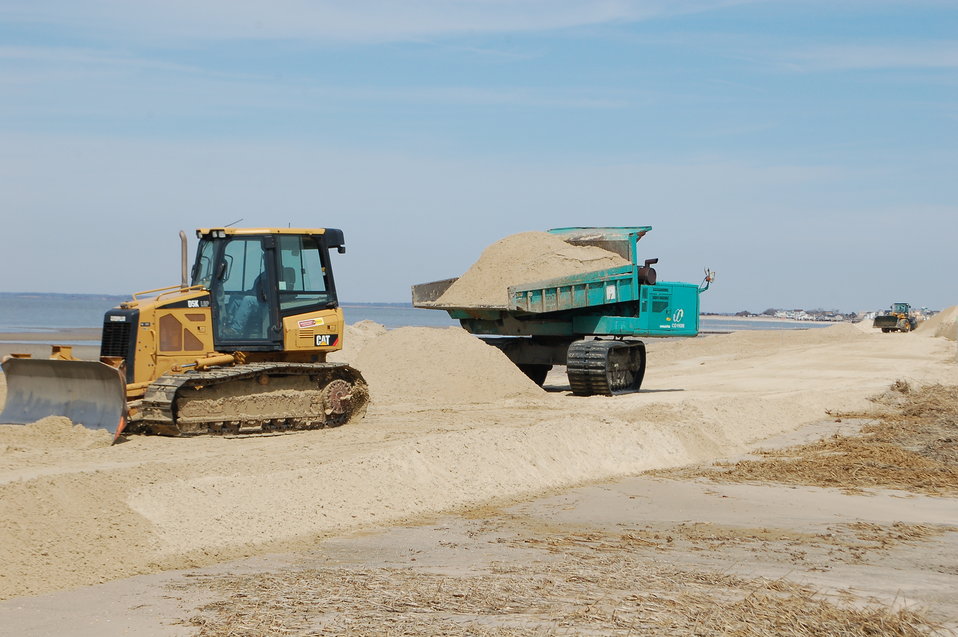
Kimbles Beach-9

New sand is deposited onto badly eroded beaches on New Jersey's Delaware Bay.